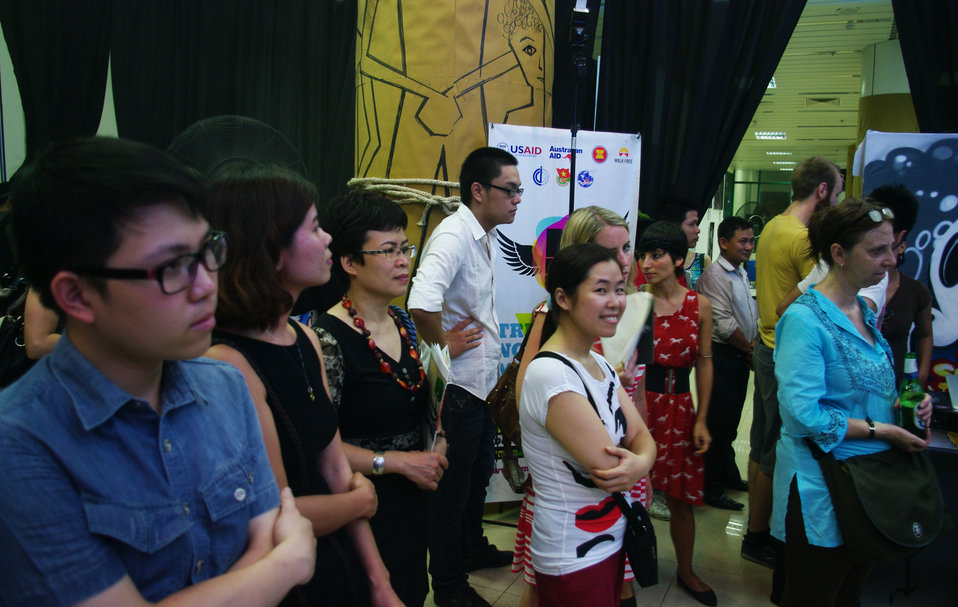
MTV EXIT opens Youth Forum in Hanoi